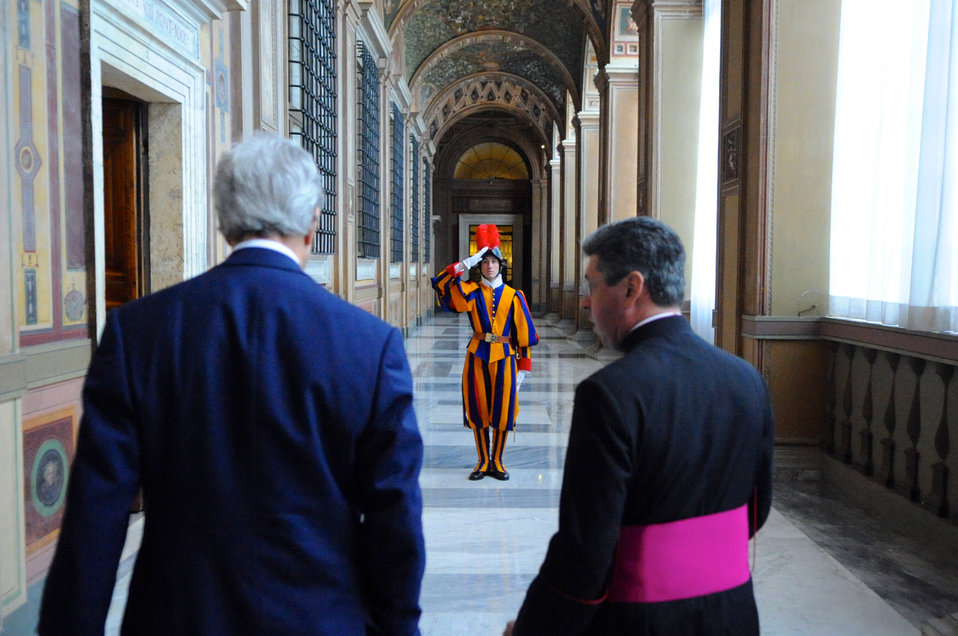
A Swiss Guard Salutes Secretary Kerry During his Tour of the Vatican

A member of the Swiss Guard salutes as Vatican Chief of Protocol Monsignor Jose Bettancourt gives U.S. Secretary of State John Kerry a tour of the Apostolic Palace in Vatican City during a visit to Rome, Italy, on January 14, 2014.